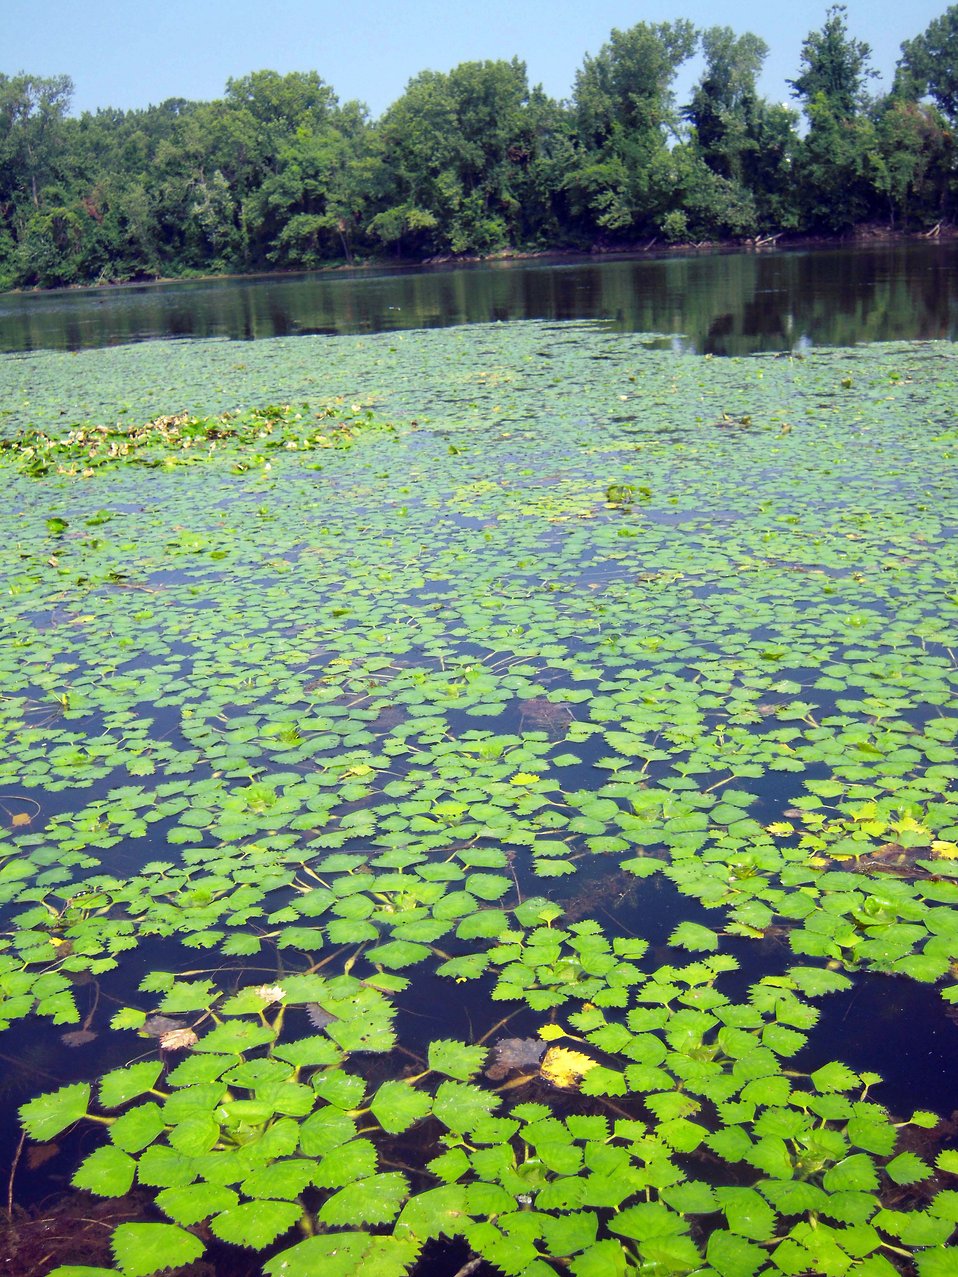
Water Chestnut

Invasive water chestnuts in Oxbow Lake, Easthampton Mass.